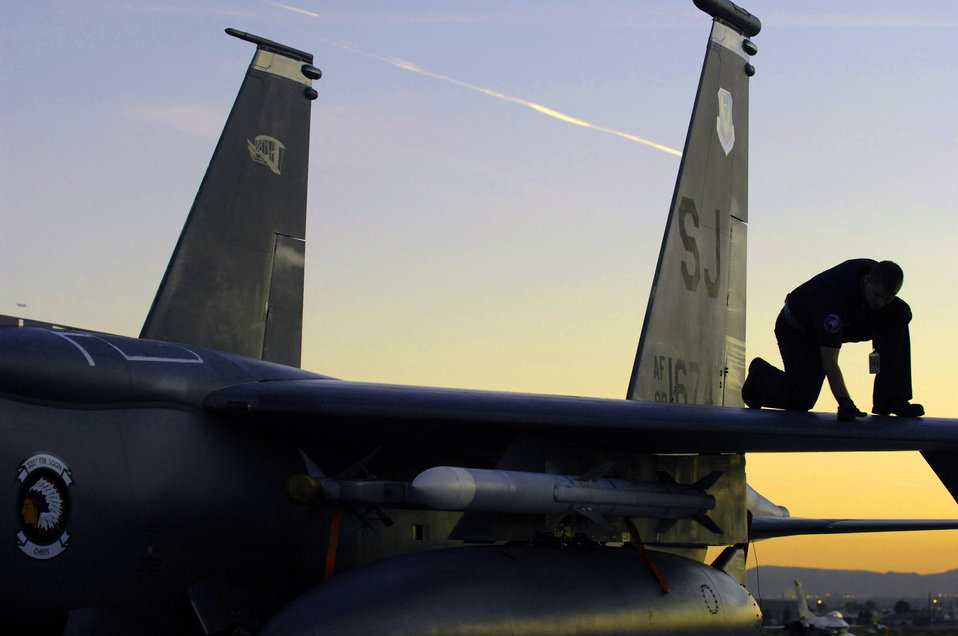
Make it perfect

Senior Airman Ken Badertscher inspects his aircraft for loose fasteners after a two-hour sortie Oct. 24 during the Red Flag exercise at Nellis Air Force Base, Nev. He is an F-15E Strike Eagle crew chief assigned to Seymour Johnson AFB, N.C.